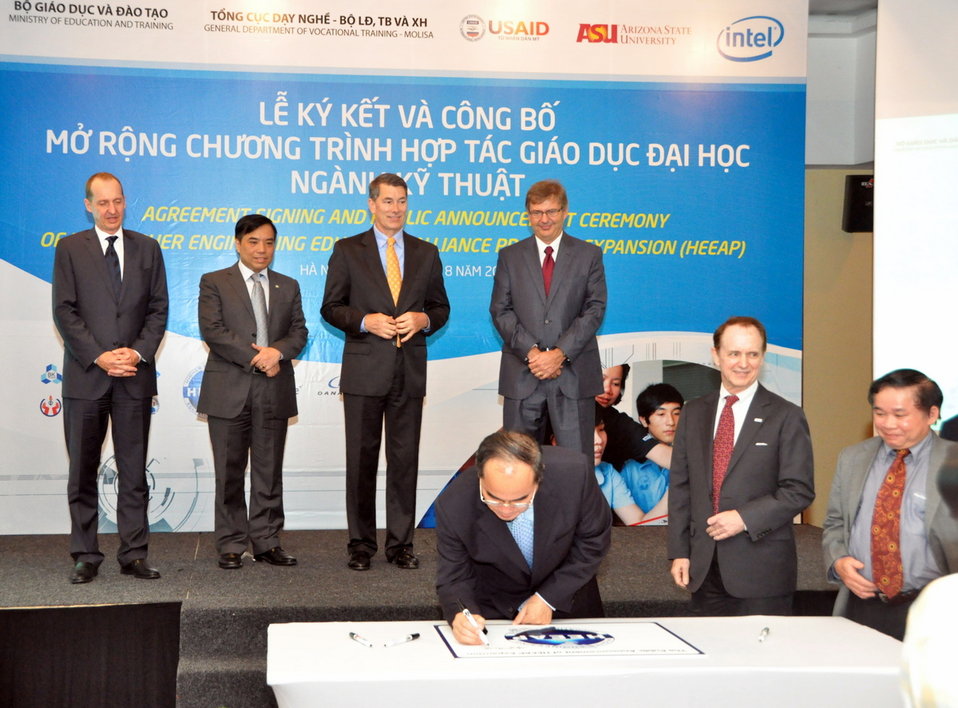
Higher Engineering Education Alliance Program Expansion Launch

Hanoi, August 20, 2012.